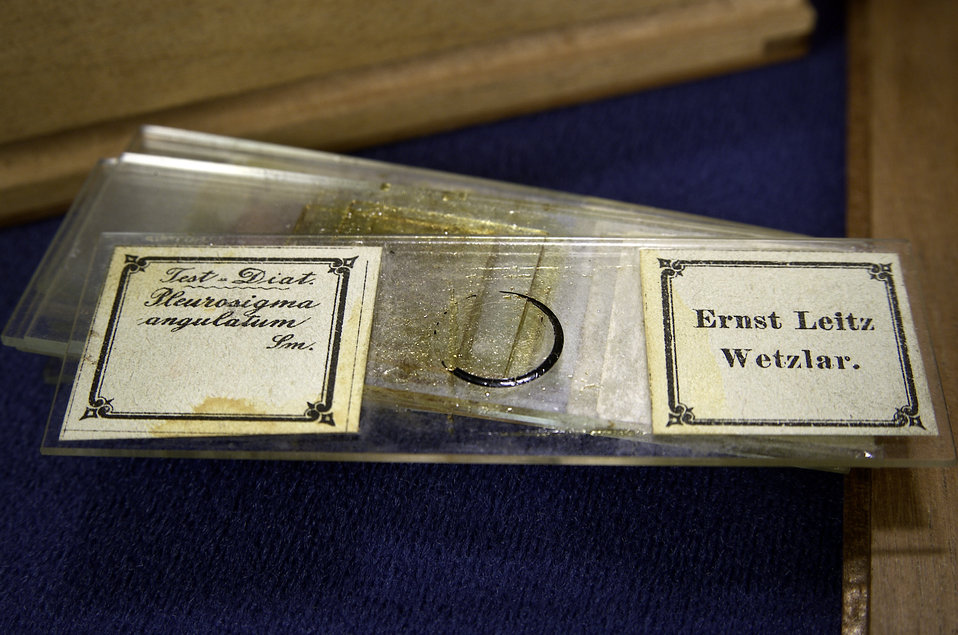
These glass microscope slide specimens were used by Dr. Joseph W. Mountin who was integral in the CDC organization's inception.